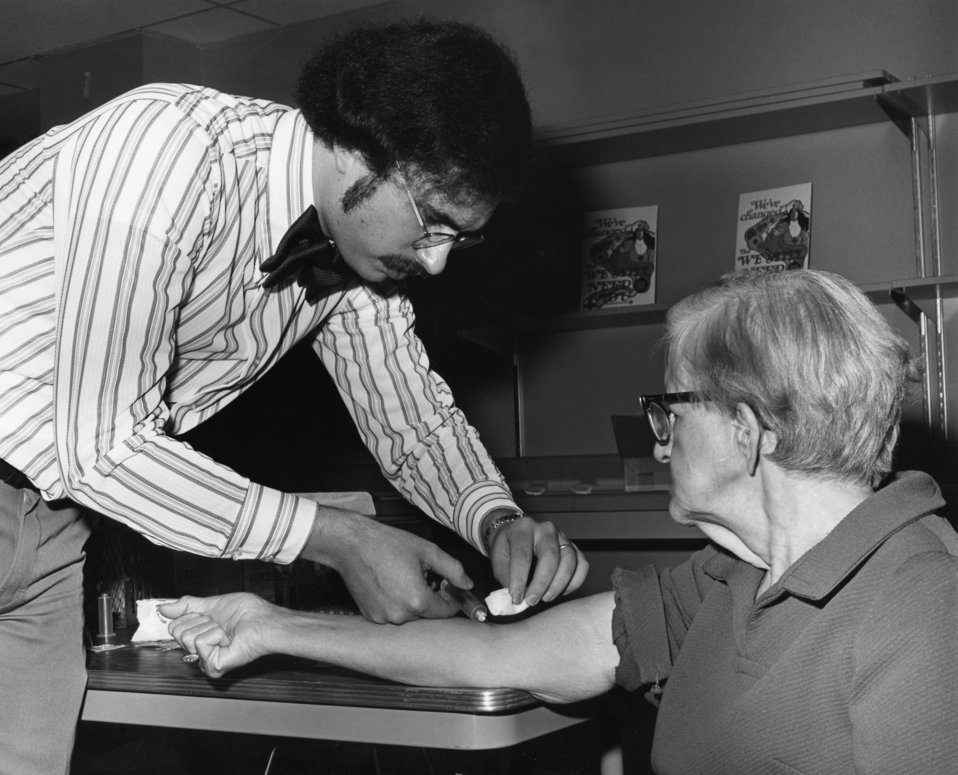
This 1976 photograph showed a health professional as he was drawing blood from an elderly man for testing during the nationwide swine flu vaccination campaign.